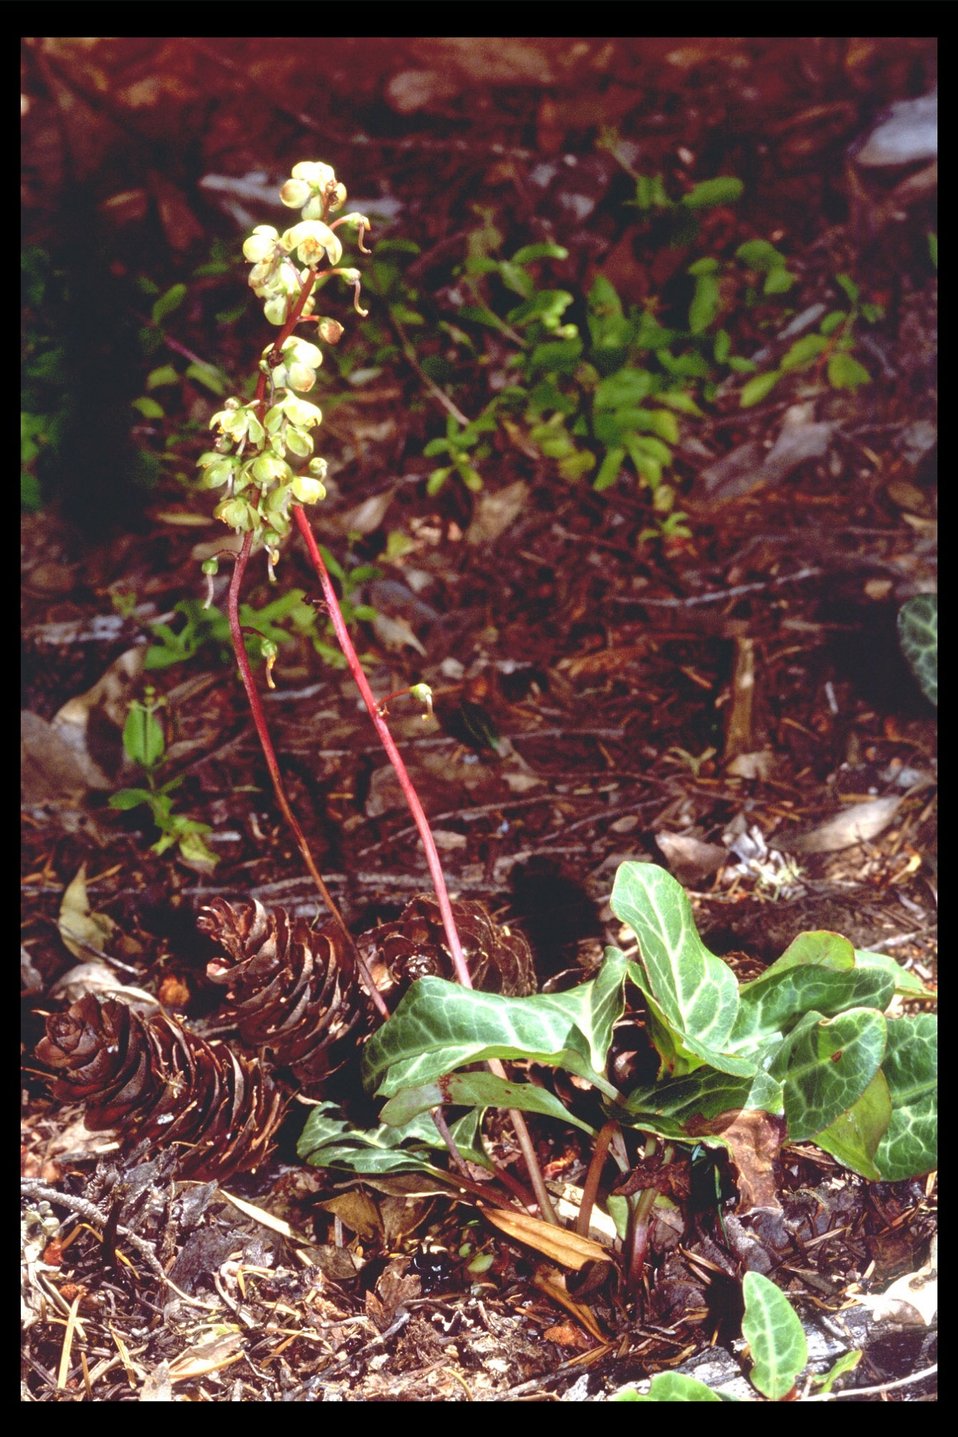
White-veined Wintergreen (Pyrola picta) at Upper Trail Creek.